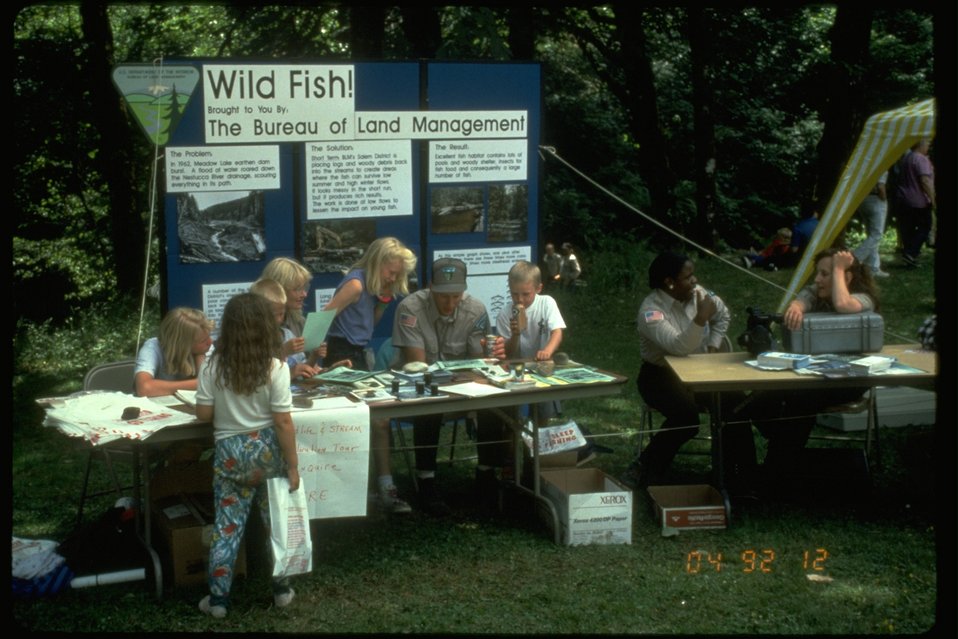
A fish display at Free Fish Day.